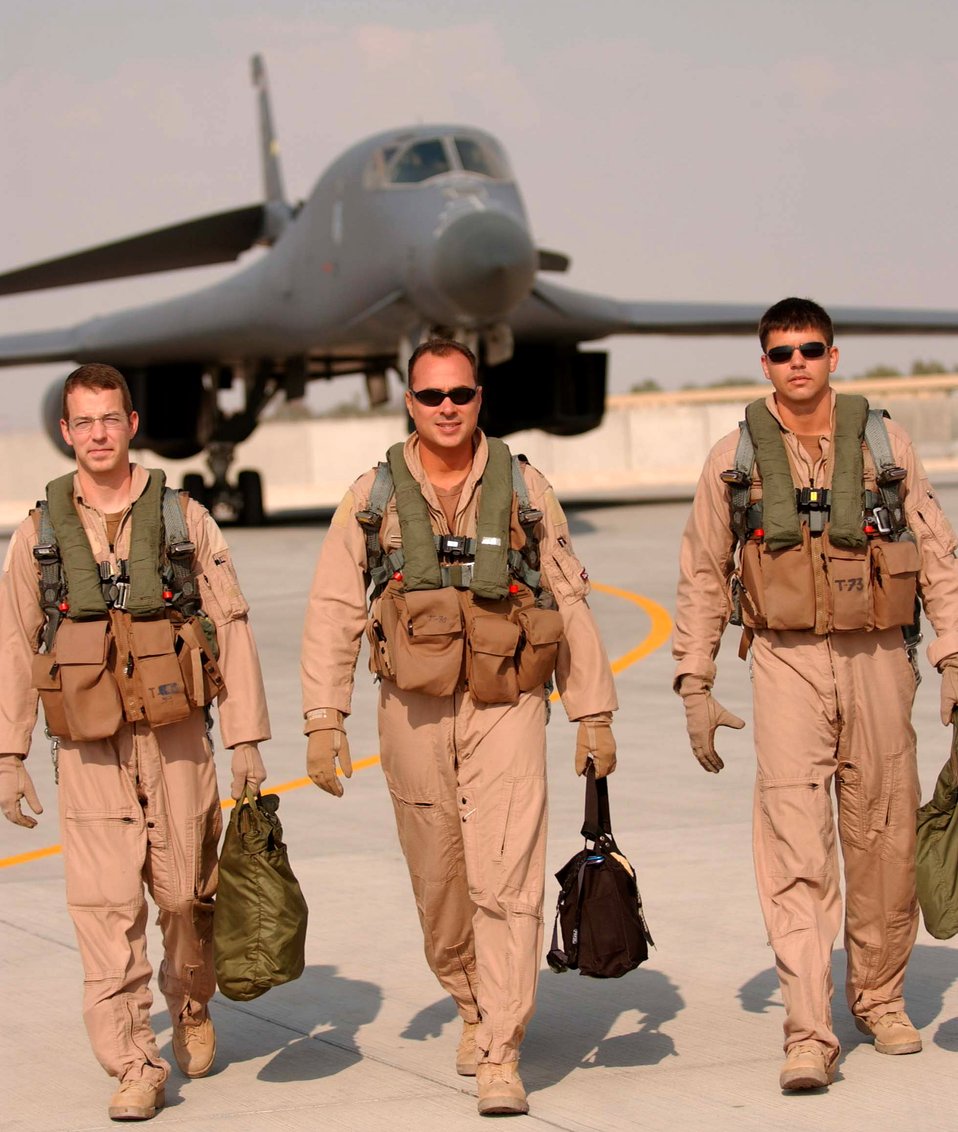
March 30 airpower: B-1B protects coalition convoy

After flying a 12-hour nighttime close-air-support mission over Afghanistan recently, Capt. Craig Morrison, Maj. Mike Jason and Capt. David Grasso (left to right) walk from a B-1B Lancer in Southwest Asia. The weapon systems officer, aircraft commander and co-pilot are assigned to the 37th Expeditionary Bomb Squadron, part of the 379th Air Expeditionary Wing in Southwest Asia.